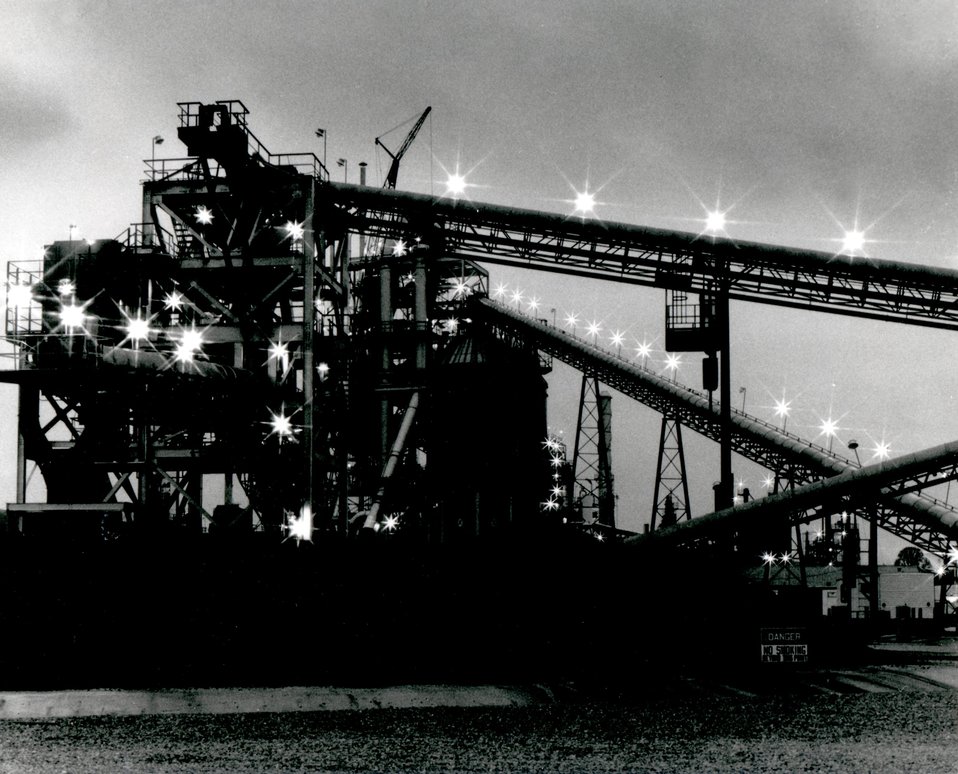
Contruction progress at the H-Coal 600 tons per day pilot plant at Catlettsburg, Kentucky, Circa 1980.